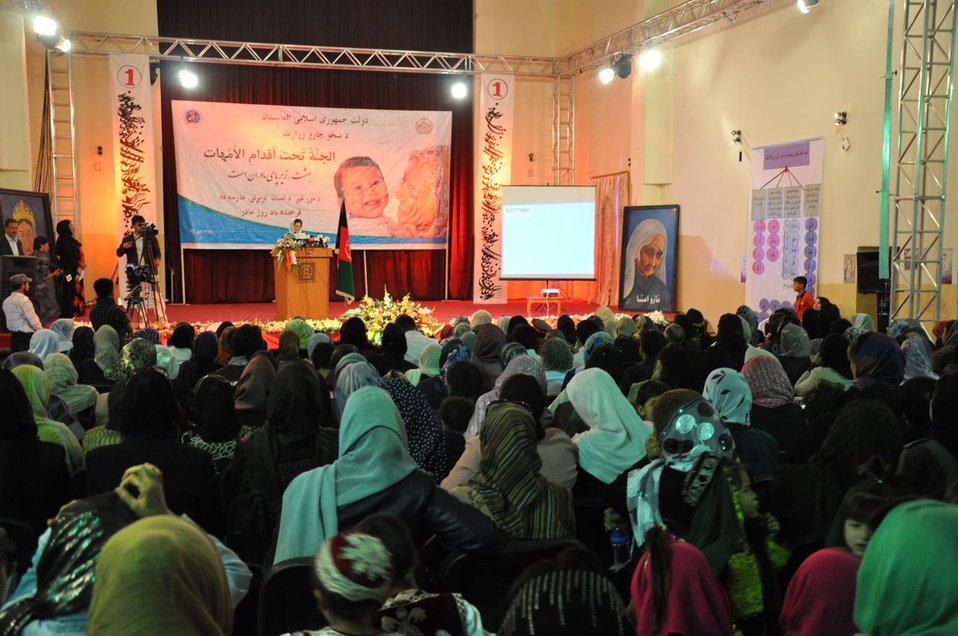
Mother's Day in Afghanistan

Minister Ghazanfar addressed the audience and spoke about the accomplishments and challenges faced by mothers in Afghanistan.